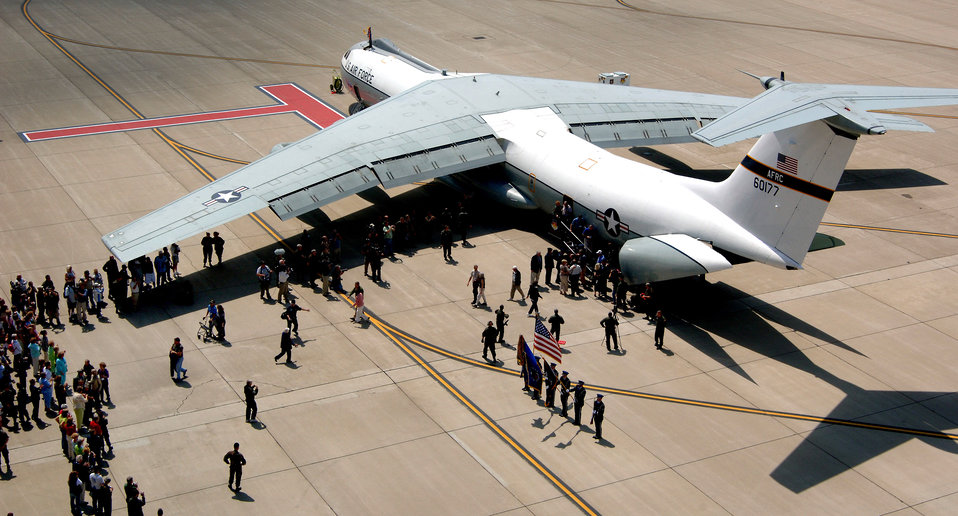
'Hanoi Taxi'

Families swarm to greet former prisoners of war moments after they landed in the C-141